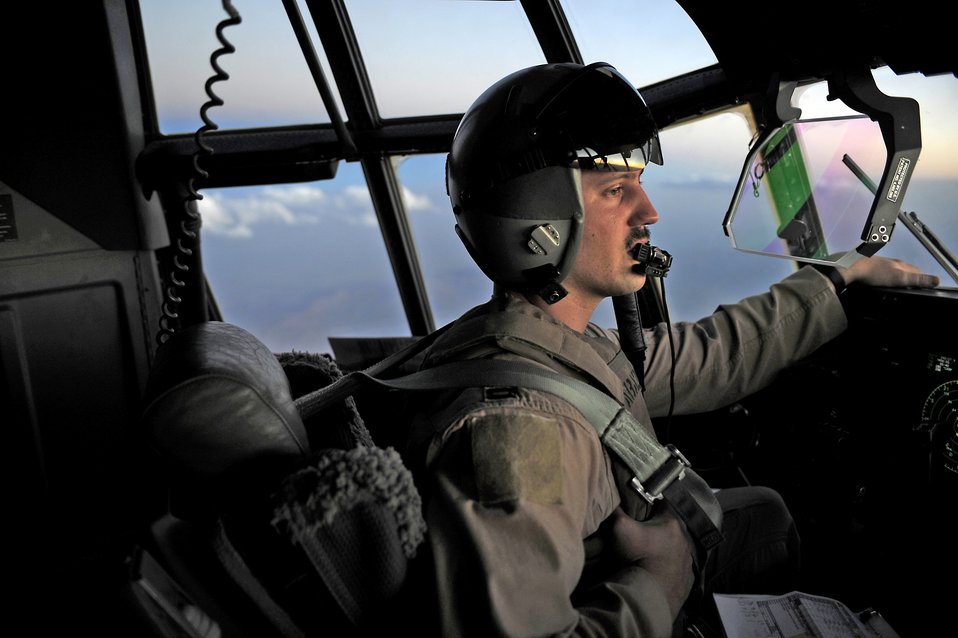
Airdrop fuels austere Afghan locations

Capt. Dan Rees monitors flight controls during a night airdrop to deliver JP-8 fuel to troops July 17 over southwestern Afghanistan. Captain Rees is aC-130J Super Hercules pilot assigned to the 772nd Expeditionary Airlift Squadron at Kandahar Airfield, Afghanistan. Captain Rees is deployed from the 41st Airlift Squadron at Little Rock Air Force Base, Ark.